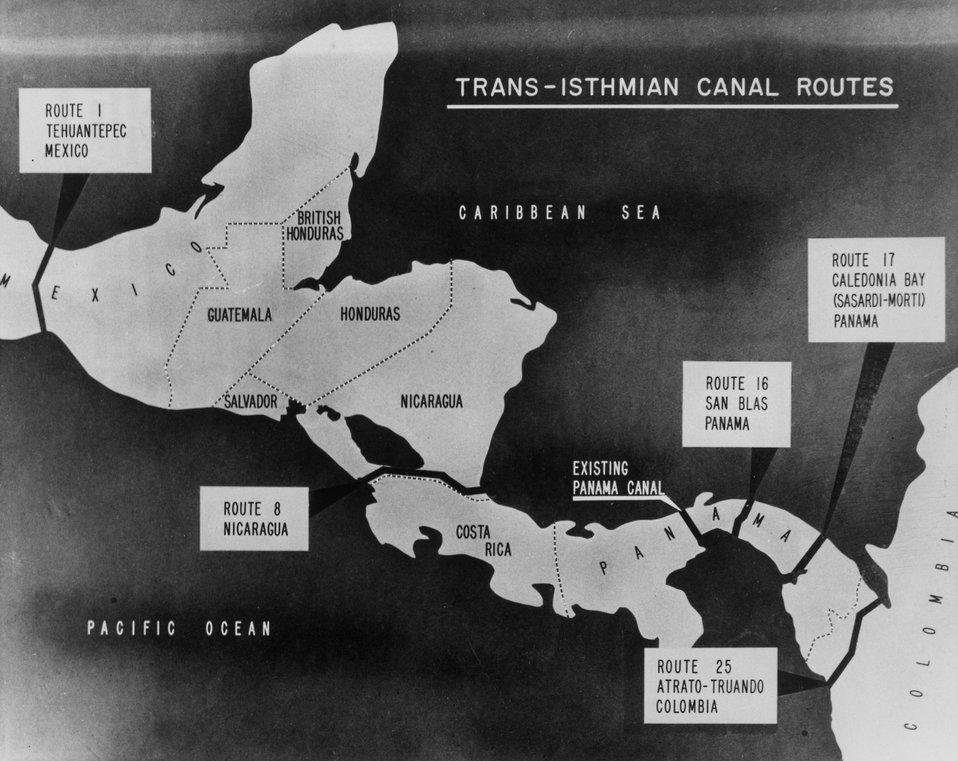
A number of different routes have been proposed from time to time for a new trans-isthmian canal to overcome the ship-size restrictions of the existing Panama Canal. c. 1965